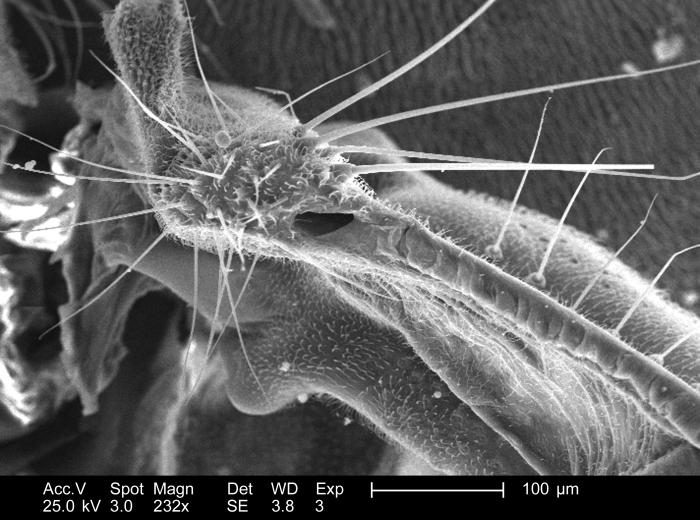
Magnified 232x, this scanning electron micrograph (SEM) depict some of the morphologic details found associated with the wing attachment of an unidentified dragonfly, found deceased on the grounds of the Decatur, Georgia suburbs. Note the sensorial hairs, or 'setae', of various sizes emanating from the exoskeletal surface of the jointed wing segments. These hairs are sensitive to changes in the organism's environment including changes in temperature, wind speed and direction, chemical variations, and changes to the physical make-up of its surroundings, i.e., tactile interaction.